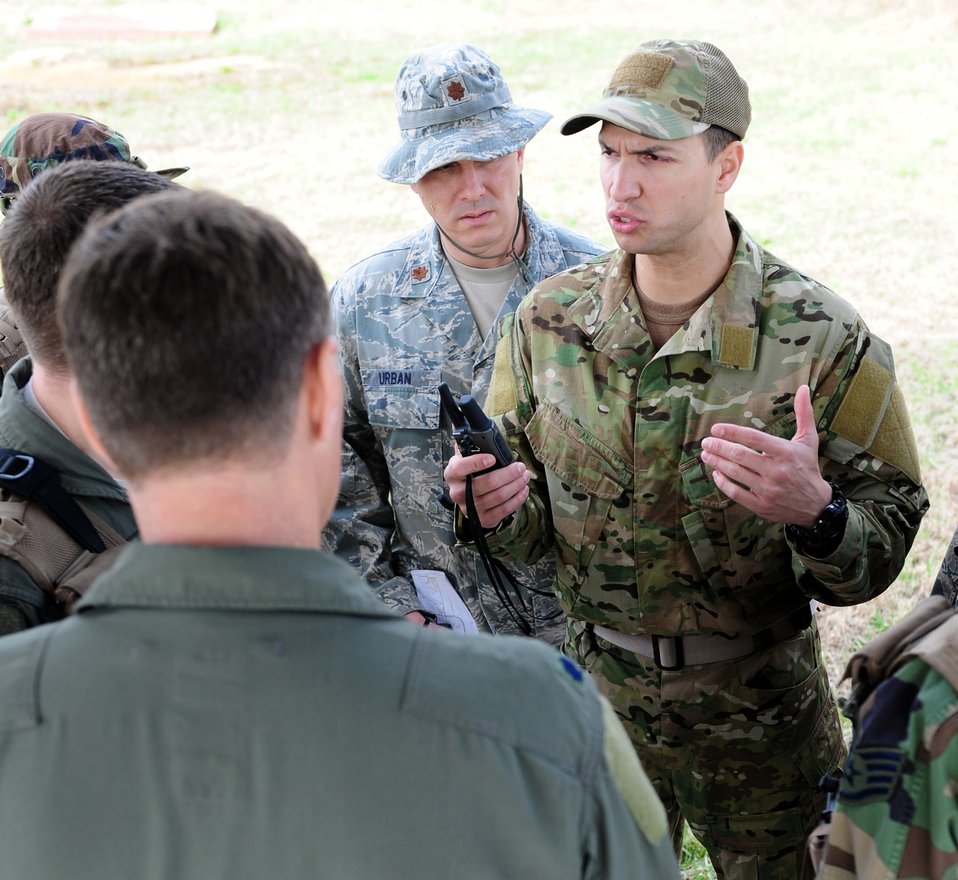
Combat survival training

Tech. Sgt. Robert Graham briefs aircrew members on the operation of radios and proper radio etiquette March 22, 2011, during combat survival training at the Illinois Army National Guard's Sparta Training Area in Sparta, Ill. Sergeant Graham is a survival, evasion, resistance and escape specialist assigned to the 375th Operations Support Squadron at Scott Air Force Base, Ill.